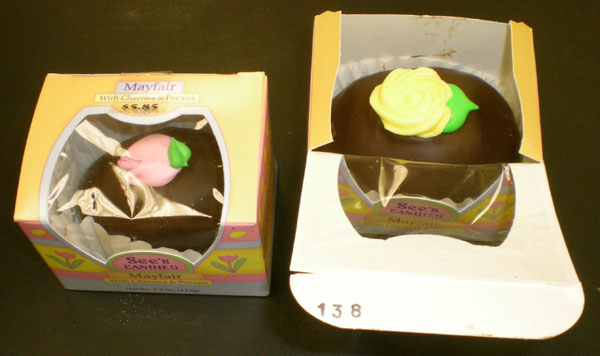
RECALLED - Candy Egg

April 19, 2011 - Product Recall - See’s Candies, Inc. Issues Allergy Alert on 4.25 ounce Mayfair Eggs, Code 138.